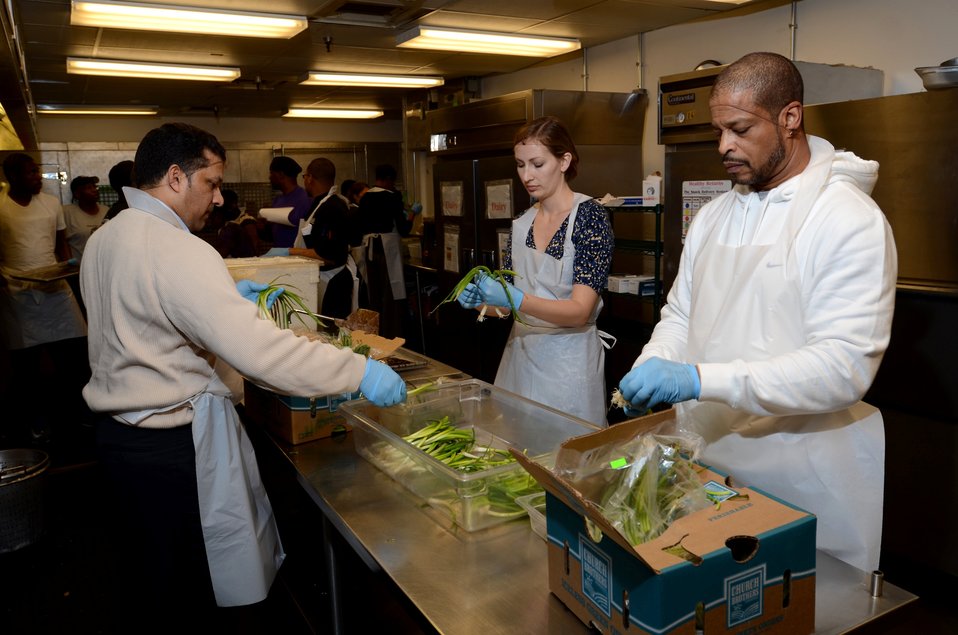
From right: William Milton Jr., Deputy Director, Office of Human Resource Management, Katie Yockam, Rural Development, and Monshi Ramdass, Office of Human Resource Management help prepare the evening meal at the D.C. Central Kitchen during USDA’s National Service Day on January 12, 2012. NSD honors Dr. Martin Luther Kings’s contributions to the Civil Rights Movement. The D.C. Central Kitchen turns leftover food into millions of meals for thousands of at-risk individuals while offering nationally recognized culinary job training to once homeless and hungry adults.